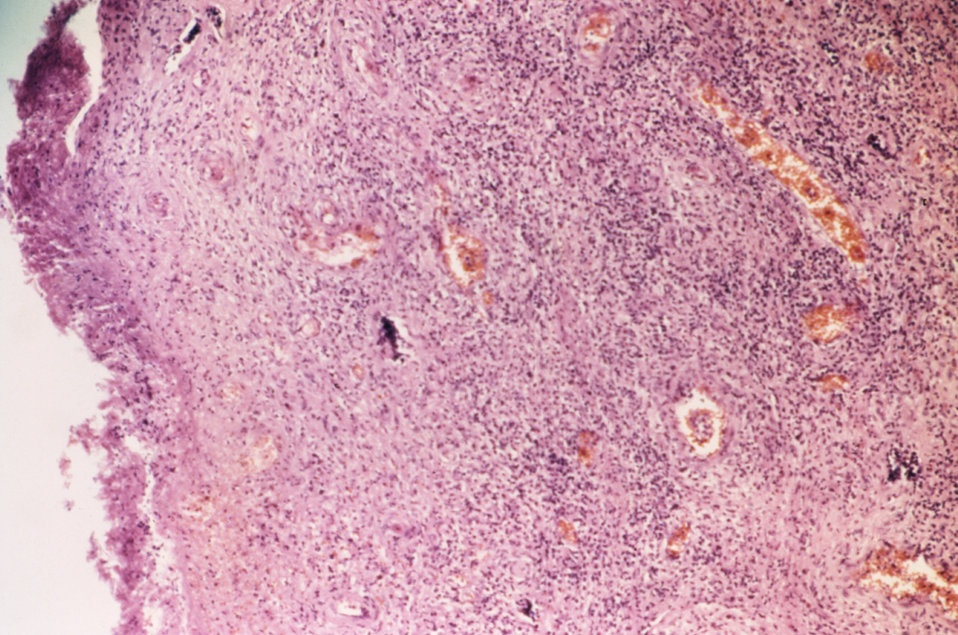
This micrograph reveals the pathologic changes in cervical/vaginal tissue due to Toxic Shock Syndrome taken during an autopsy.